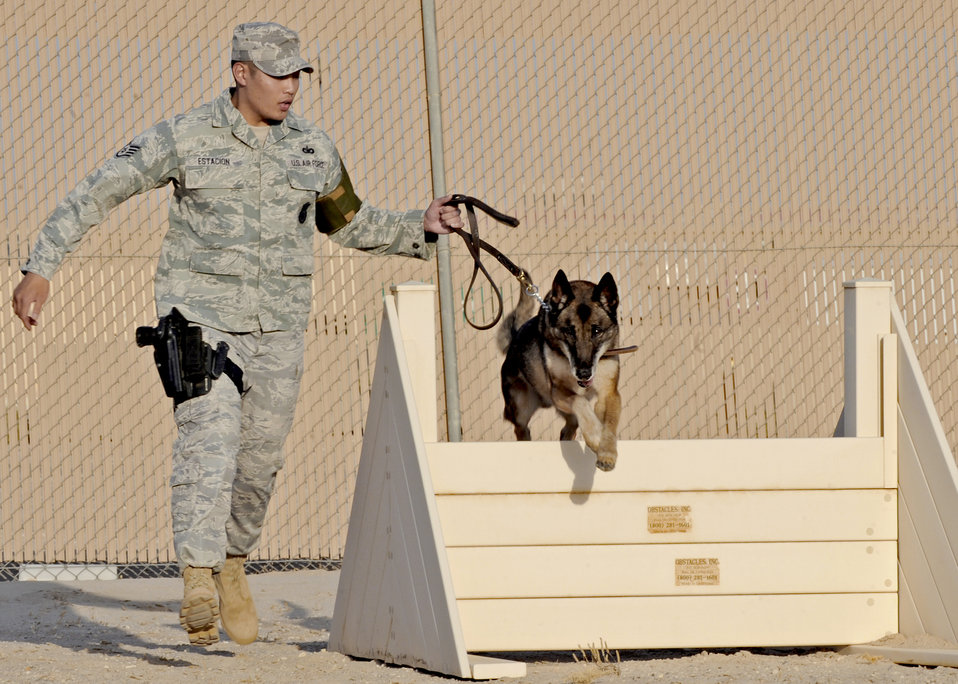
386 ESFS MWD

Staff Sgt. Lino Estacion takes his military working dog, Gabe, through an obstacle course as part of a routine training and exercise program July 27, 2010, in Southwest Asia. Sergeant Estacion is a dog handler with the 386th Expeditionary Security Forces Squadron.